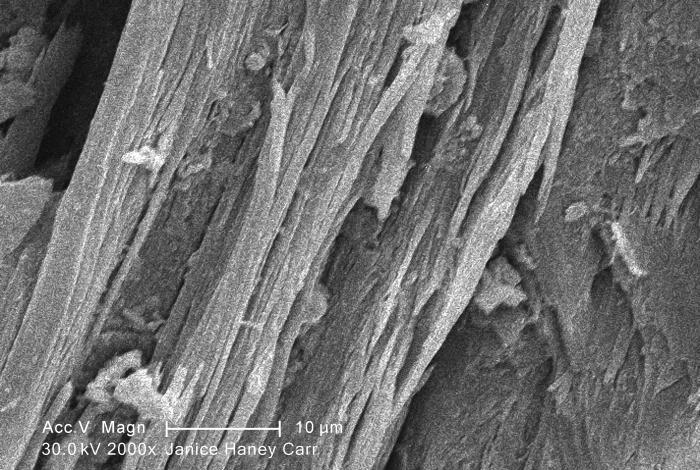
Under a high magnification of 2000X, this scanning electron micrograph (SEM) revealed some of the microcrystalline ultrastructure exhibited by a piece of raw chrysotile, or white asbestos, which had been excavated from the Lowell Asbestos Mine on Belvidere Mountain, Vermont.